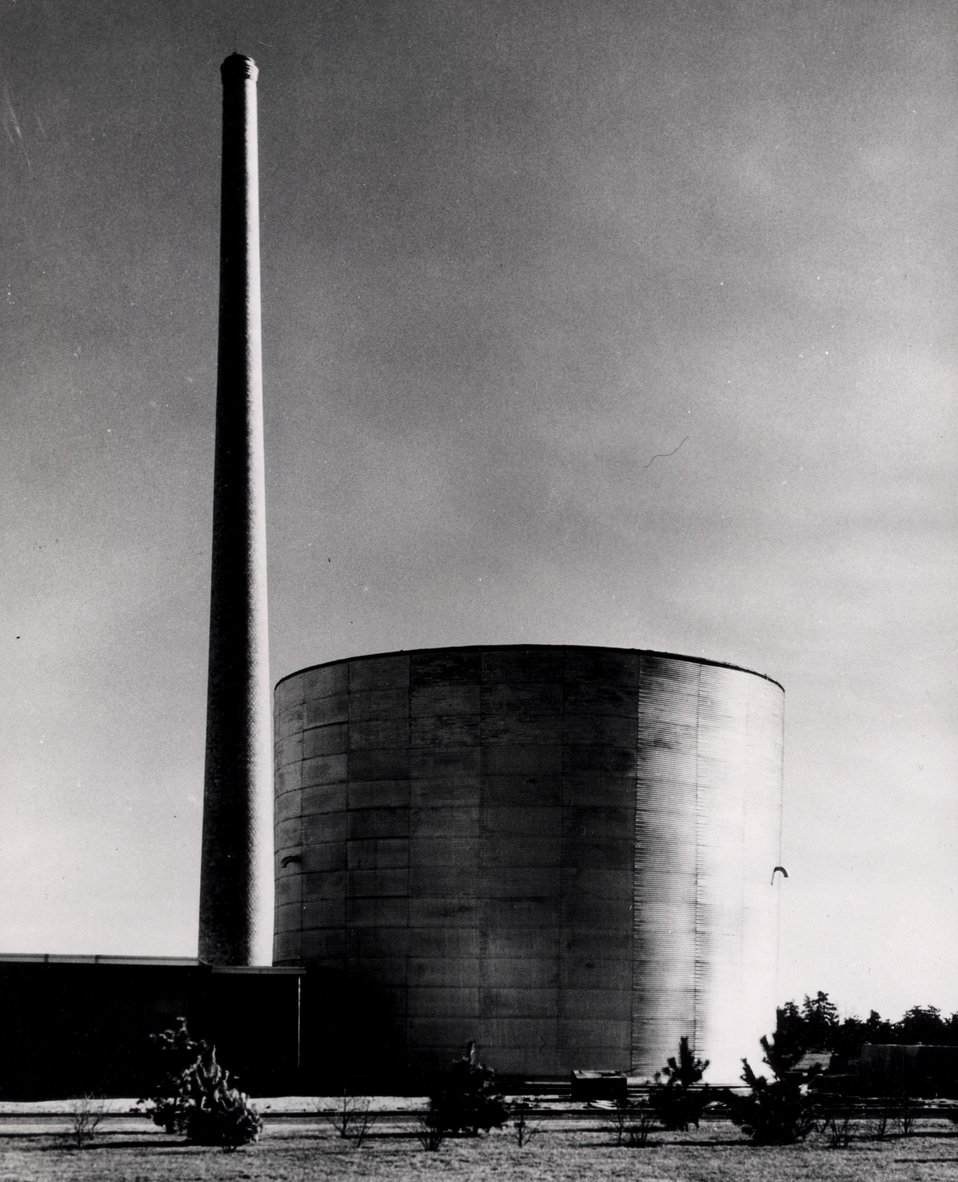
Cooling air for the reactor's graphite reflector is forced out of the 150-ft stack at the Medical research reactor building at Brookhaven.
c.1960